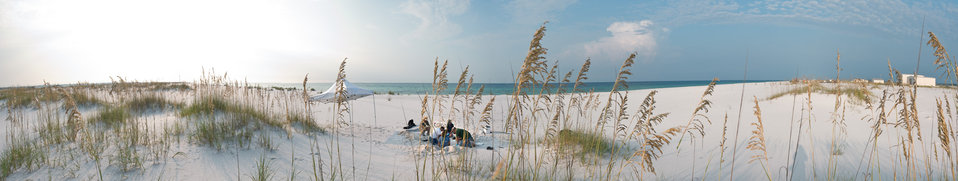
Turtle Eggs avoid Gulf Oil Danger

Sunrises as biologists at Eglin Air Force Base, Fla., begin packing two coolers with 112 Loggerhead sea turtle eggs on August 9, 2010. Because of the very delicate nature of the embryo, extreme care will be taken to transport them to the Atlantic coast, to a controlled climate facility where they will be allowed to hatch in the cooler. Wildlife technicians will then release them into the ocean free from the threat of encountering oil from the spill in the Gulf of Mexico.